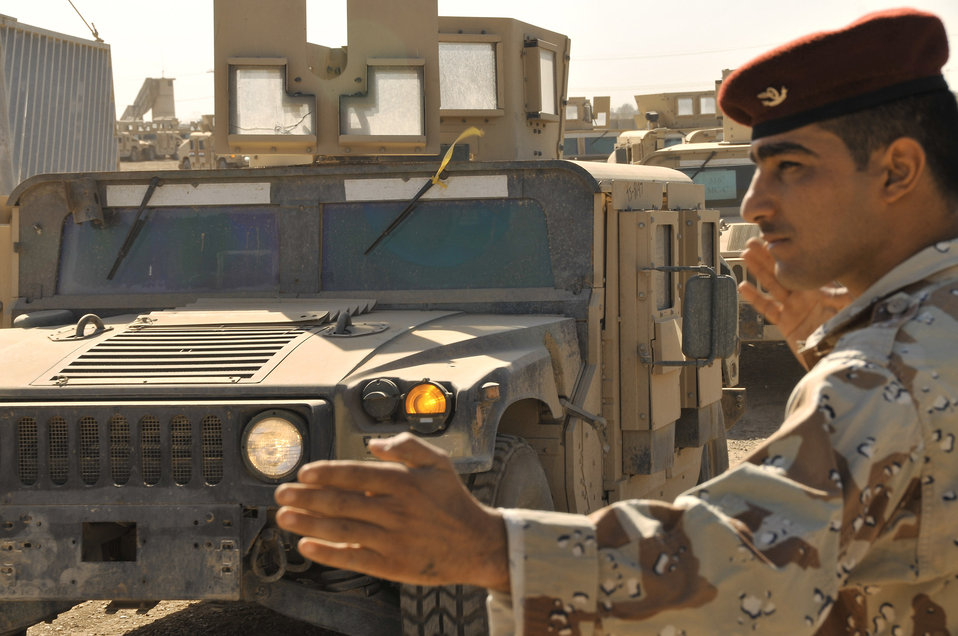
Airmen distribute Humvees to Iraqi forces

An Iraqi army private directs U.S. and Iraqi soldiers as they drive M1114 Humvees from the Taji Redistribution Property Assistance Team Humvee yard to the next staging point in March at Camp Taji, Iraq. The RPAT works with Multinational Security Transition Command-Iraq officials to turn over up-armored Humvees that will be sold to the Iraqi government for use by the Iraqi army and police.